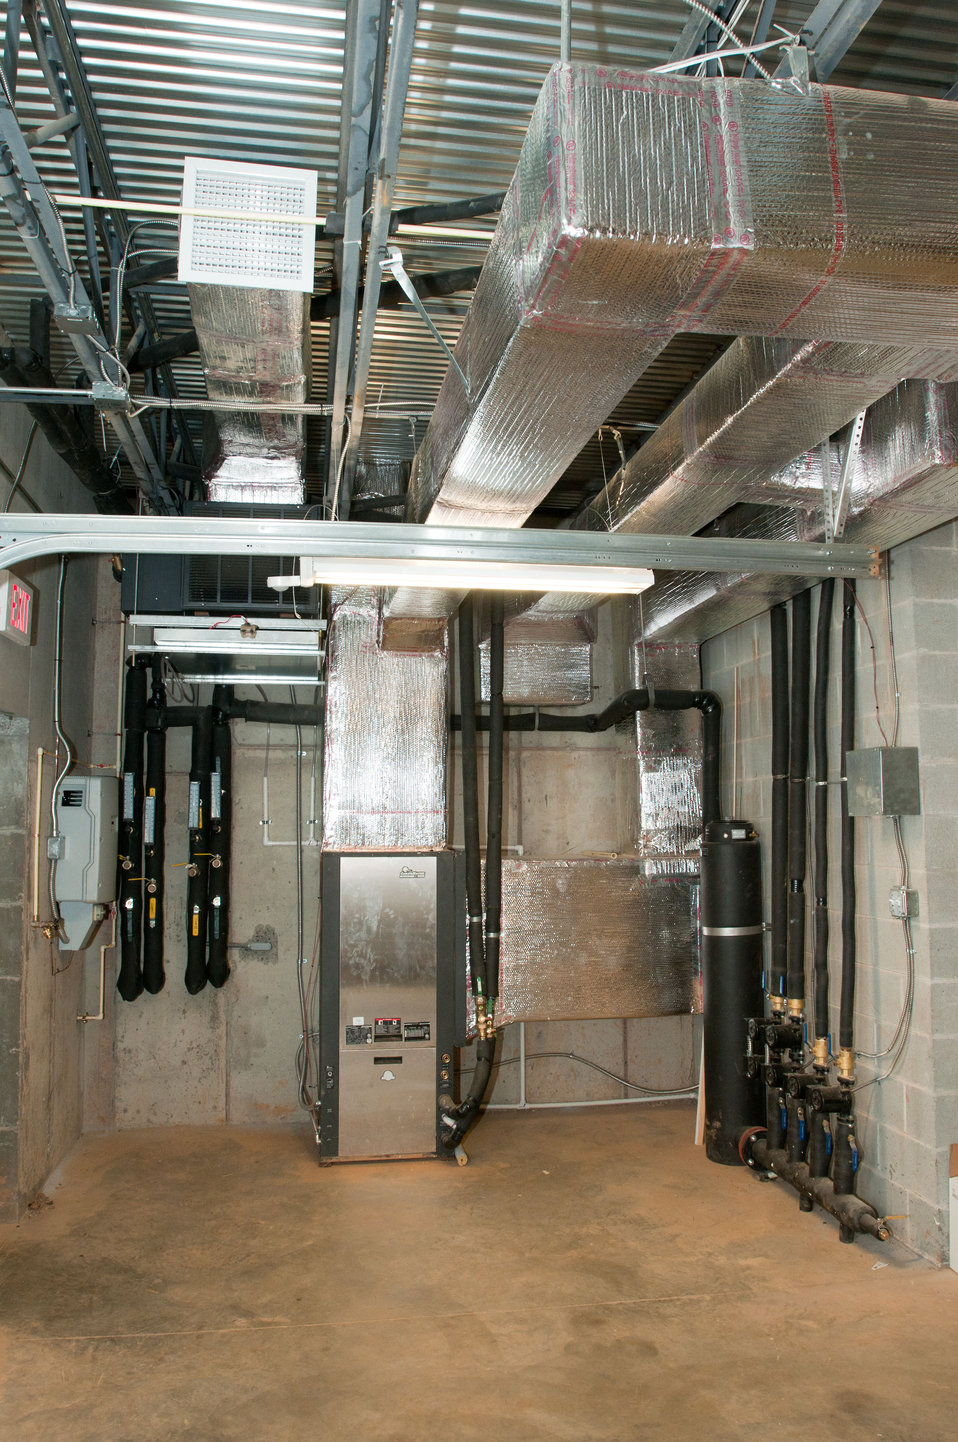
Part of the geothermal system at Cooper Vineyards in Louisa, VA, the first winery on the East Coast and the second in the country to be awarded the fourth and highest, Platinum certification by Leadership in Energy and Environmental Design (LEED).
From a Virginia Wine Board Marketing Office press release, “The process of building a LEED platinum certified building was initially more expensive and arduous than co-owners, Jacque Hogge, MD and Geoffrey Cooper, MD expected, but they were able to get financial assistance from the United States Department of Agriculture. “Know that there are grants available to help with the costs of sustainable building projects,” Hogge advises to other potential green wineries. Cooper Vineyards received 2 of the 3 USDA (U.S. Department of Agriculture Rural Development (RD) Rural Energy Financing program) grants awarded in Virginia in 2010 to help with the expenses of their construction.”
Rural Energy Financing program focuses on loan guarantees, loans and grants to agricultural producers, businesses, cooperatives and rural residents for renewable energy systems and to make energy efficiency improvements.
The tasting room and building collects rainwater from the roof; uses low flow water fixtures to reduce usage by 40%; utilizes structurally insulated panels for the roof and walls; heats and cools the entire building using a geothermal system that includes pipes that are embedded in the parking lot; low-voltage LED lighting with daylight and occupancy sensors provide ample light when it is needed; a solar panel array provides more than 15% of the energy needs for the building, and much of the construction materials are from local and recycled material sources. For more information about USDA please go to www.usda.gov, Rural Development and Rural Energy Financing. LEED was developed by the U.S. Green Building Council (USGBC) is a 501 c3 non-profit organization committed to a prosperous and sustainable future for our nation through cost-efficient and energy-saving green buildings.